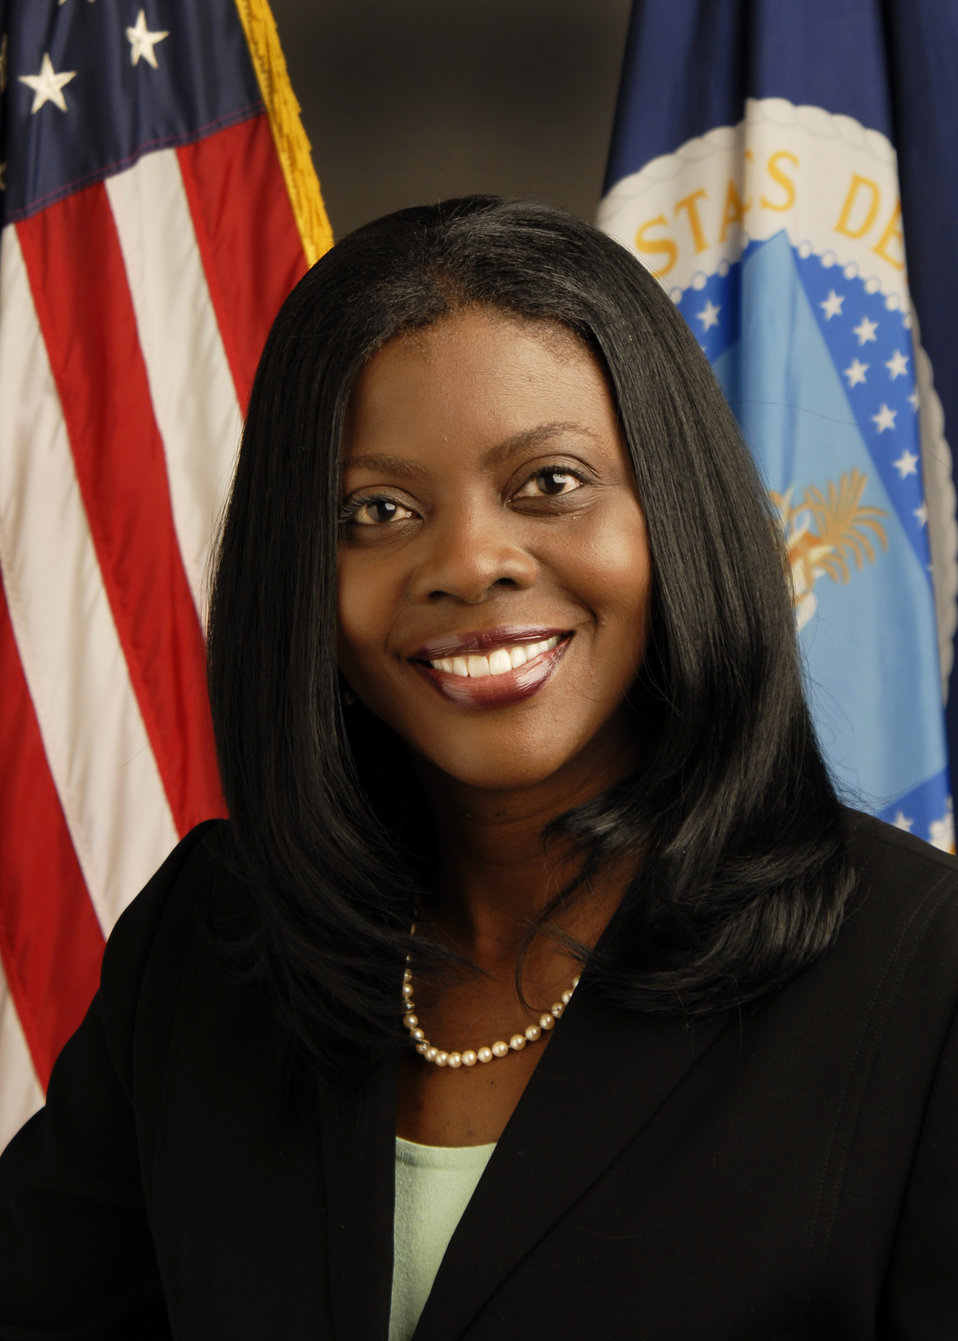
20110615-REE-KJH An Associate Administrator for National Programs, ARS, Dr. Chavonda Jacob Young

An Associate Administrator for National Programs, ARS, Dr. Chavonda Jacob Young.